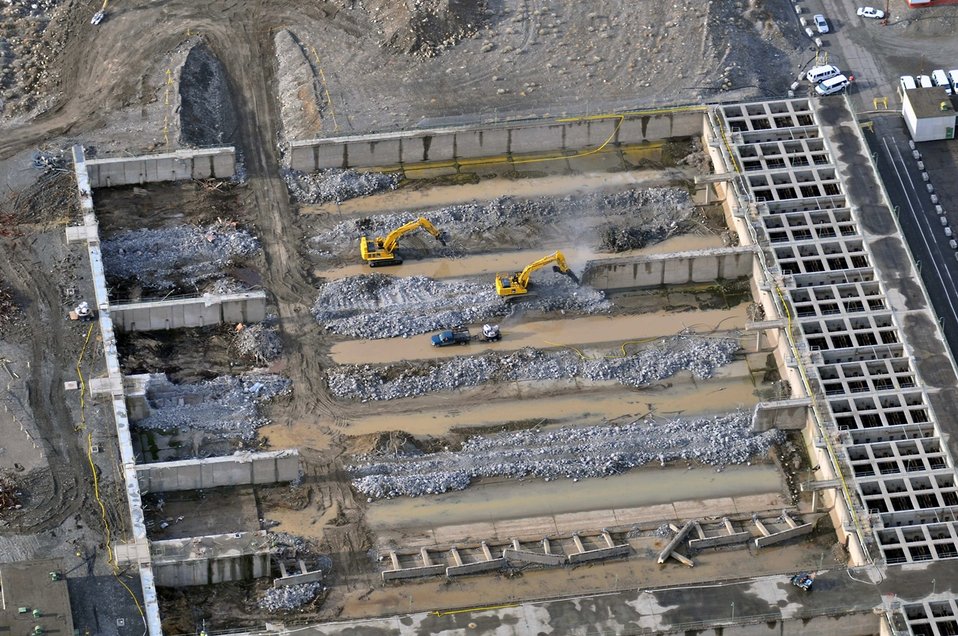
Recovery Act funds demolition of 380,000 Square Feet of Concrete Facilities near Columbia River

Demolition of the 100K West Reactor Water Treatment Facilities during the year-long Recovery Act-funded demolition effort.